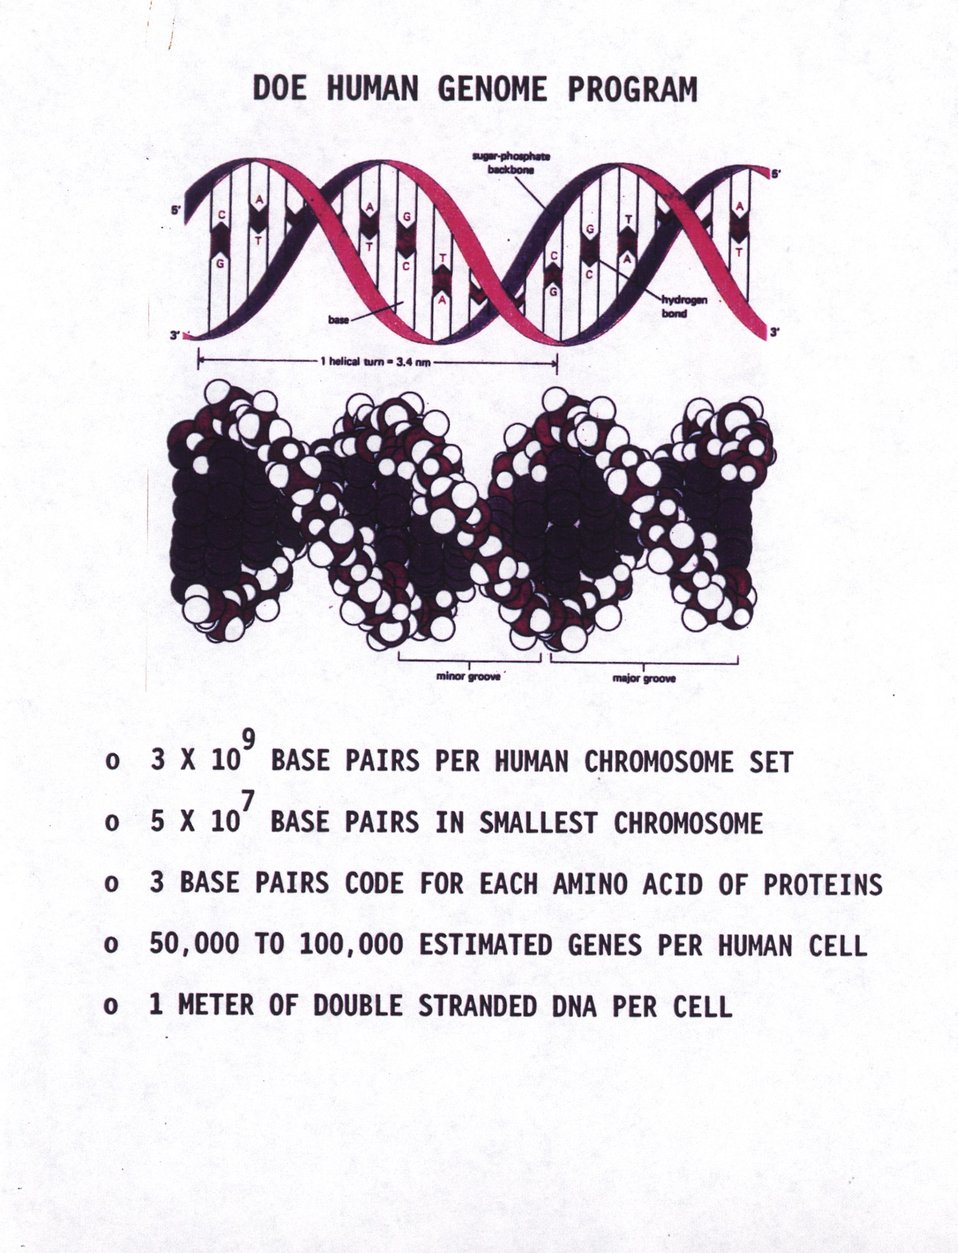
DOE Human Genome Program.